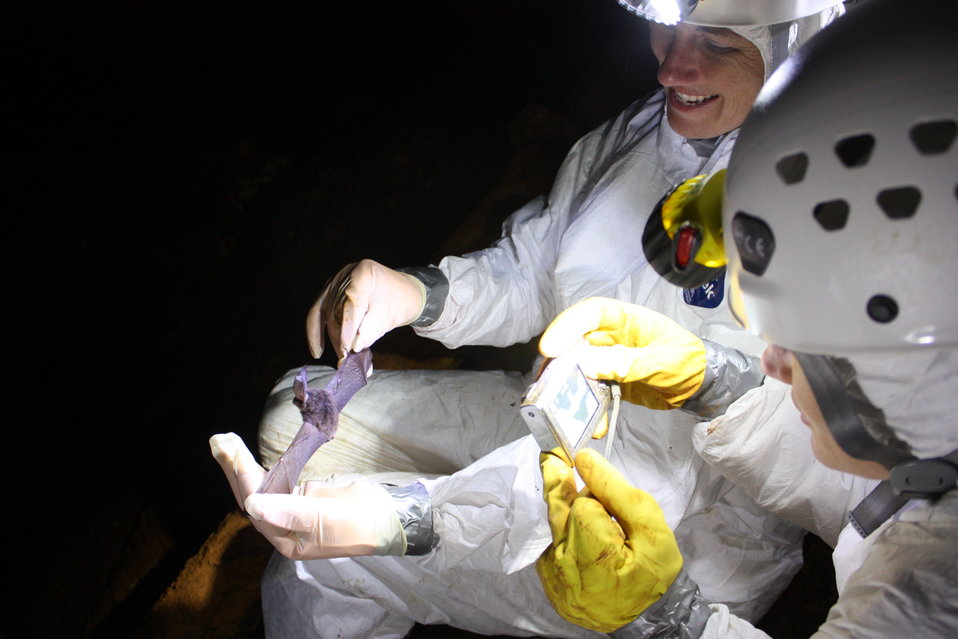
NCWRC biologist Gabrielle Graeter and USFWS biologist Sue Cameron photographing dead bat wing